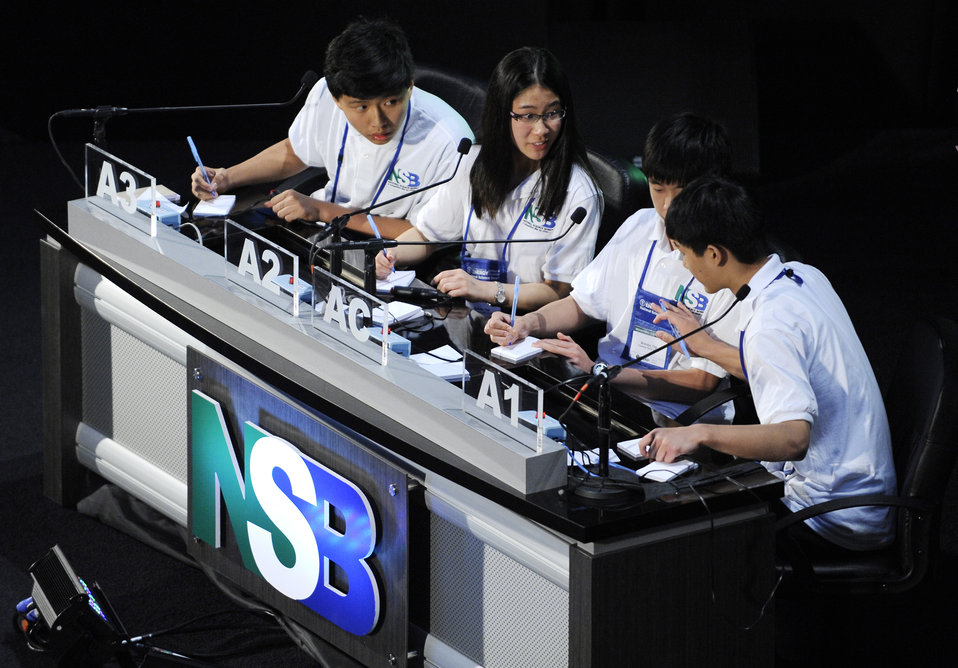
2013 National Science Bowl

Caleb He, left, Melissa Yap, Brendan Yap and Anthony Ji from Creekside Middle School in Carmel, Ind., compete in the final round of the 2013 National Science Bowl at the National Building Museum, Monday, April 29, 2013, in Washington, DC. Creekside Middle School beat Takoma Park Middle School in the 2013 National Science Bowl Championship match.